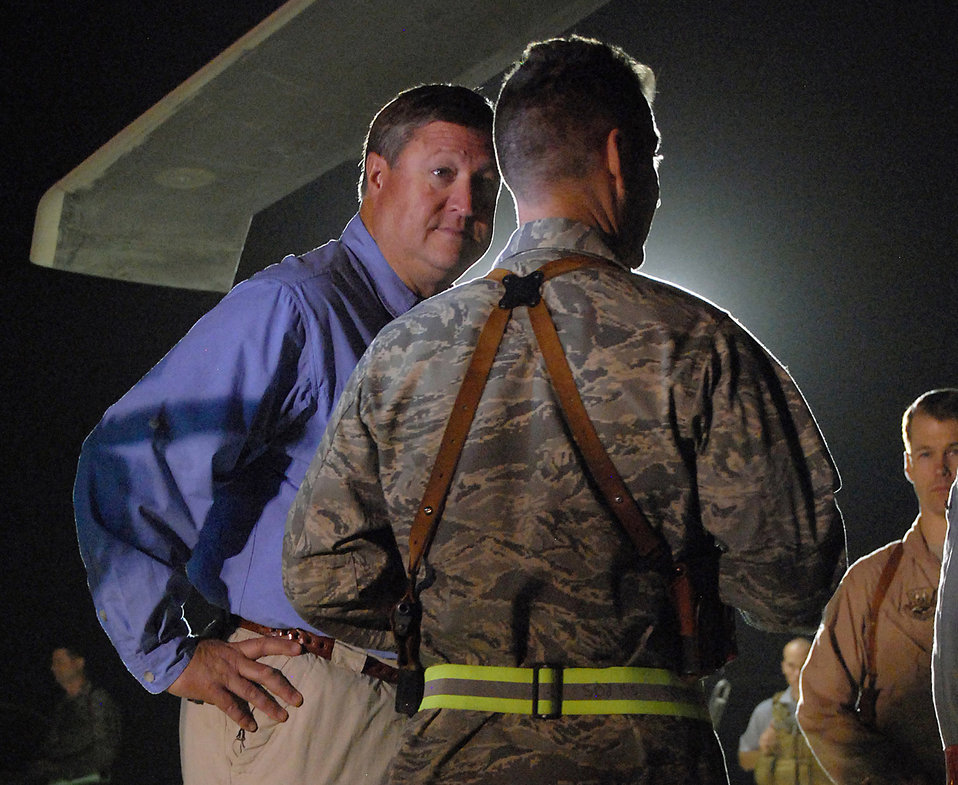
Secretary tours Joint Base Balad, shares Air Force vision

Secretary of the Air Force Michael B. Donley and Lt. Col. Chad Franks talk about the 332nd Air Expeditionary Wing's combat search and rescue capabilities Oct. 13 at Joint Base Balad, Iraq. Colonel Franks is the 66th Expeditionary Rescue Squadron commander and is deployed from Nellis Air Force Base, Nev.